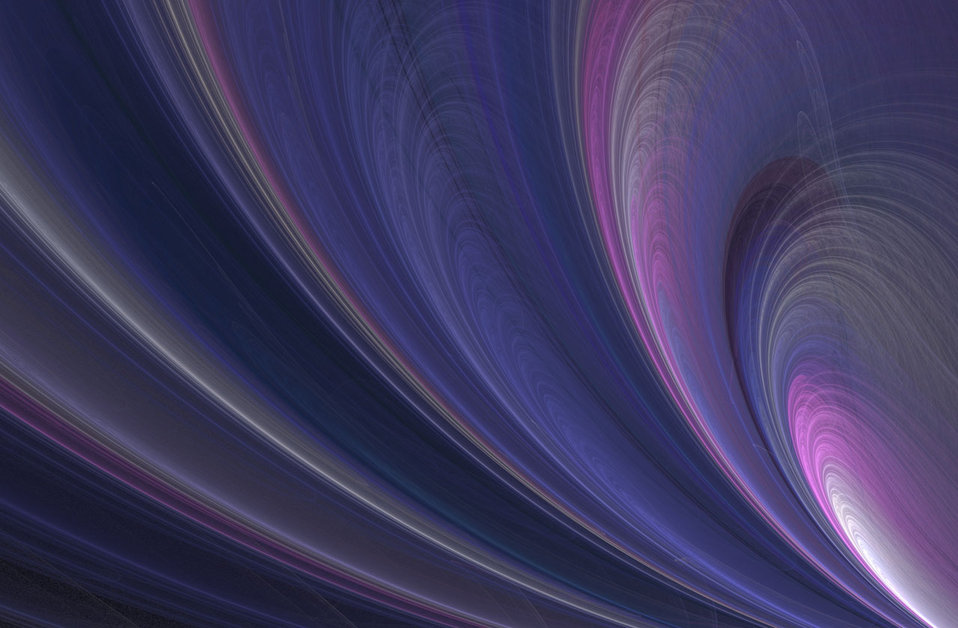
Purple fractal

A pruple sweeping fractal pattern.